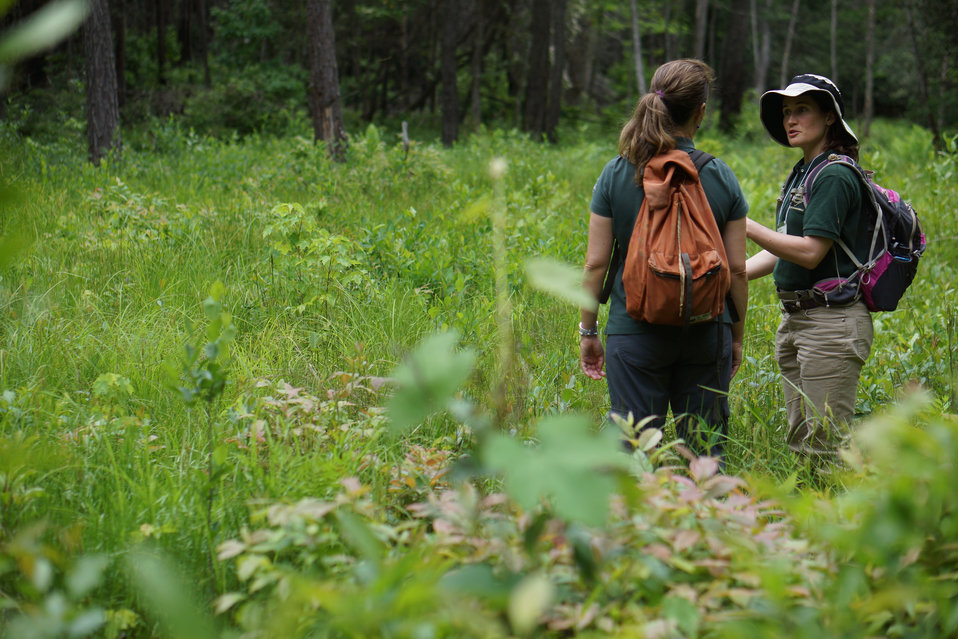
Jennifer Ceska and Gabrielle Graeter

In May, bog conservationists from Tennessee, North Carolina, and Georgia convened in the north Georgia mountains for the spring, 2014 meeting of the Bog Learning Network. The event provided an opportunity for biologists to see, first hand, the result of management efforts at two north Georgia bogs. More importantly, the outings provided an opportunity to share innovative approaches to bog management, such as the role of the Georgia Plant Conservation Alliance in conserving rare plants and coordinating a cadre of volunteers to work on bog management.

The Bog Learning Network was convened in the winter of 2013 as a way to bring together people working for bog conservation across the Southern Appalachians. Southern Appalachian bogs are one of North America’s rarest habitats and home to many rare plants and animals.